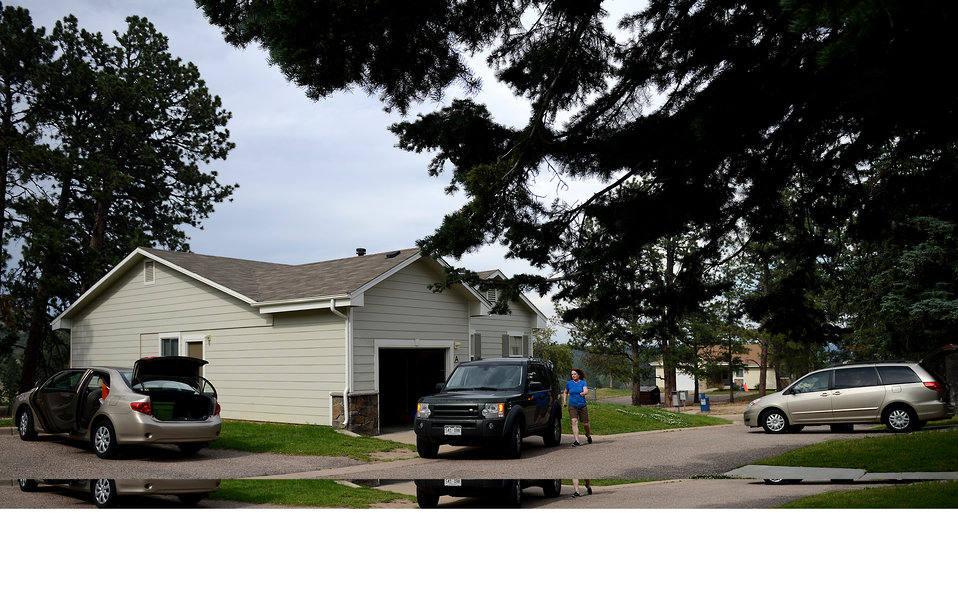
Waldo Canyon Fires

U.S. Air Force Academy residents Gwenn Garrett and her son Orion Garrett Johnson hurry and pack up their family's possessions during the Waldo Canyon Fire on the U.S. Air Force Academy June 27, 2012.